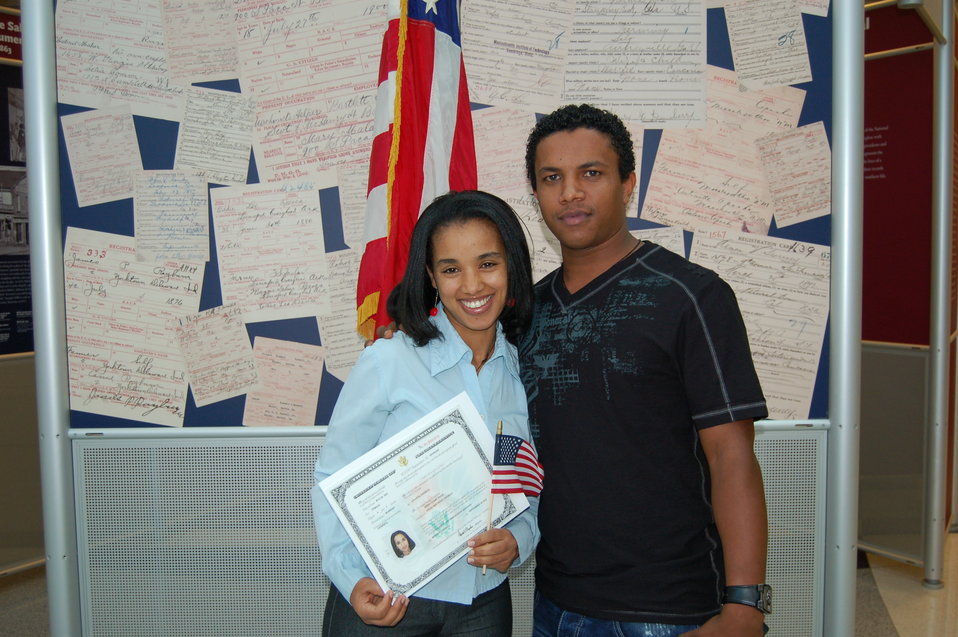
New Citizens